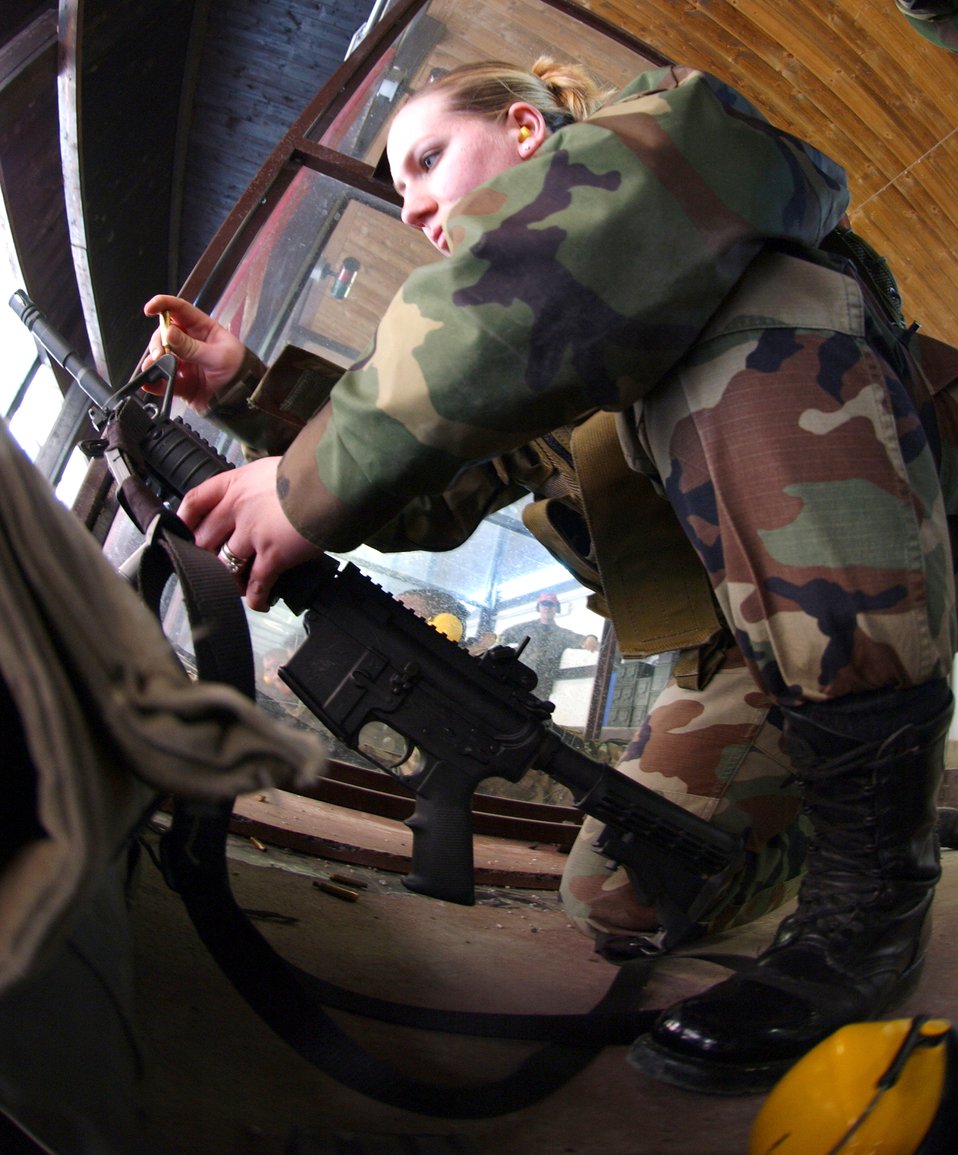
Shoot to qualify

AVIANO AIR BASE, Italy -- Airman 1st Class Kristi Morrell prepares to shoot the M-4 Carbine machine gun during combat arms training here March 7, to qualify for live fire and safety weapon handling procedures. She is a security forces Airman with the 31st Security Forces Squadron. Security forces Airmen are required to shoot the M-4 twice a year to retain weapons qualification.